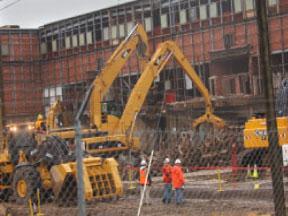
Oak Ridge Excavator Grapplers

Excavator grapplers retrieve steel framing from demolition of the K-25 Building in Oak Ridge, TN.